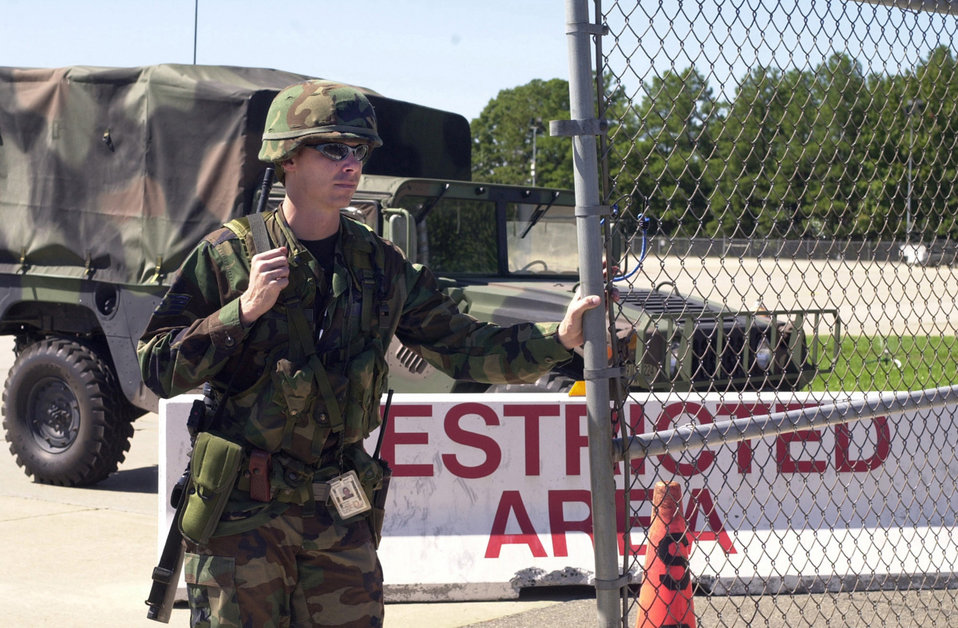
Cole

OPERATION NOBLE EAGLE -- Staff Sgt. William W. Cole patrols the front gate at Byrd Field, Richmond International Airport, to the flight line checking for line badges of those who try to enter. In support of Operation Noble Eagle, the 192nd Fighter Wing activated most of it's security police in response to the attack on America on Sept. 11, 2001.